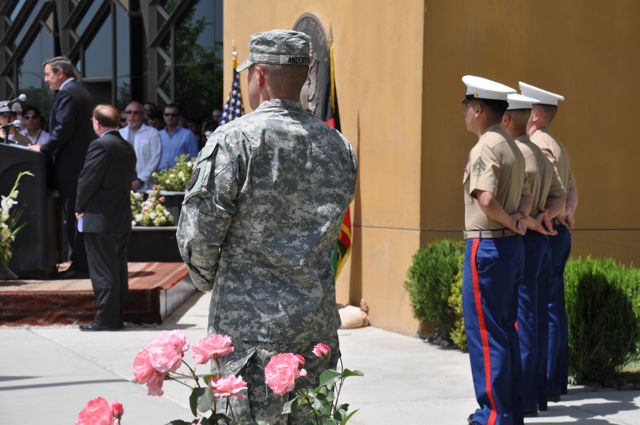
Memorial Day at US Embassy in Kabul